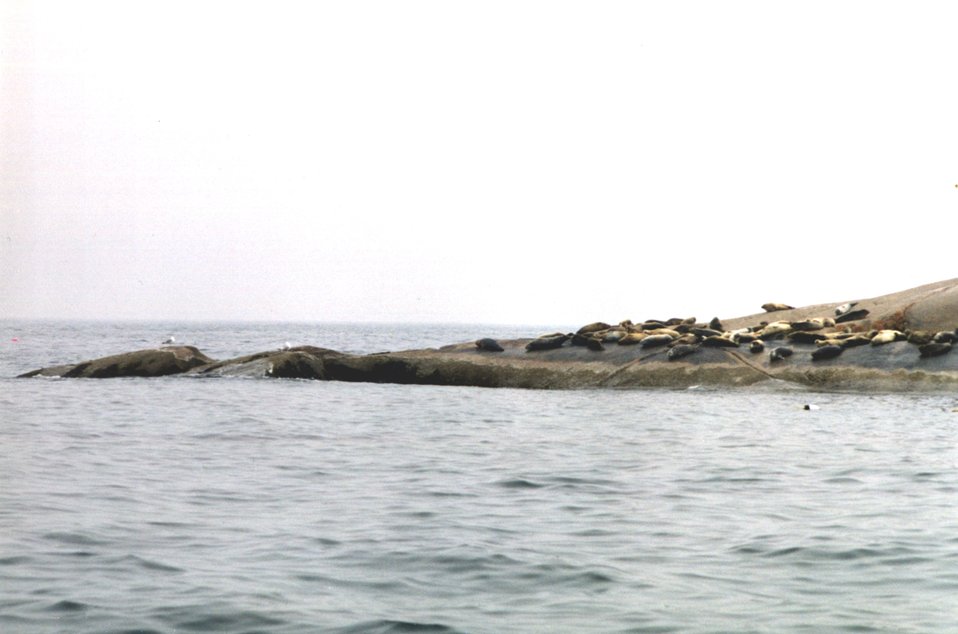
Harbor seals on Muscle Ridge Island.